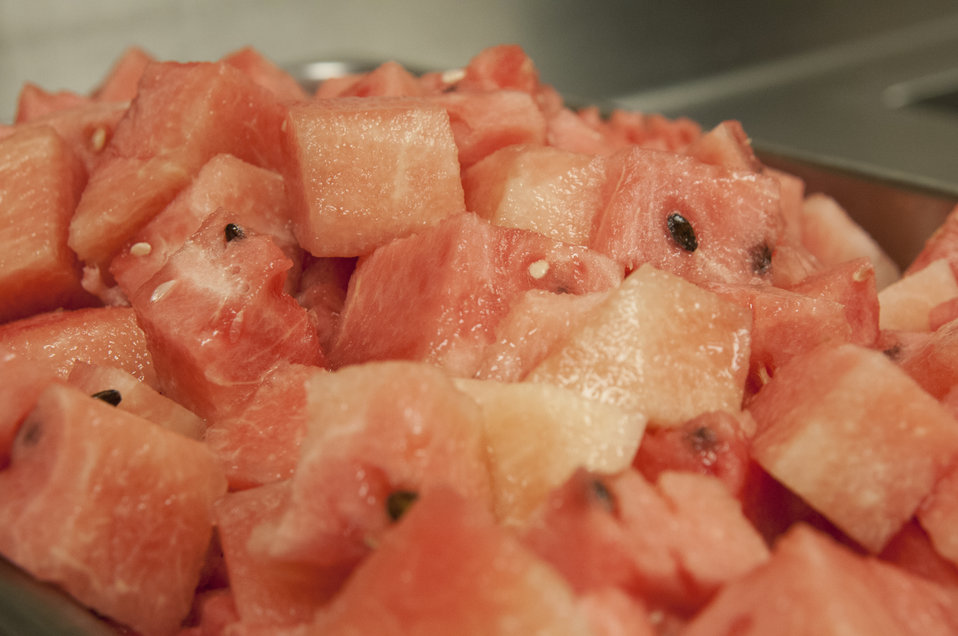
School lunch staff and students enjoy the new school lunch menu created to meet the new standards at the Yorkshire Elementary School in Manassas, VA on Friday, Sept. 7, 2012.